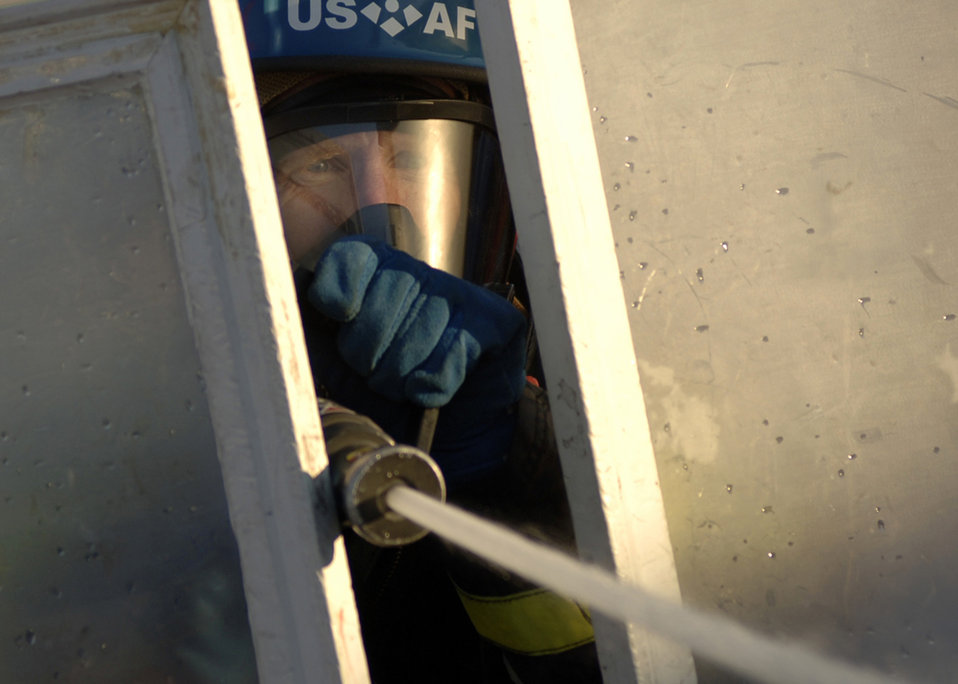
Aim Low

Dave Chiodo, Team Travis, crashes through some make shift doors to spray a target with a fire hose during the Firefighter Combat Competition at Morrow, Ga., Oct. 13, 2006.